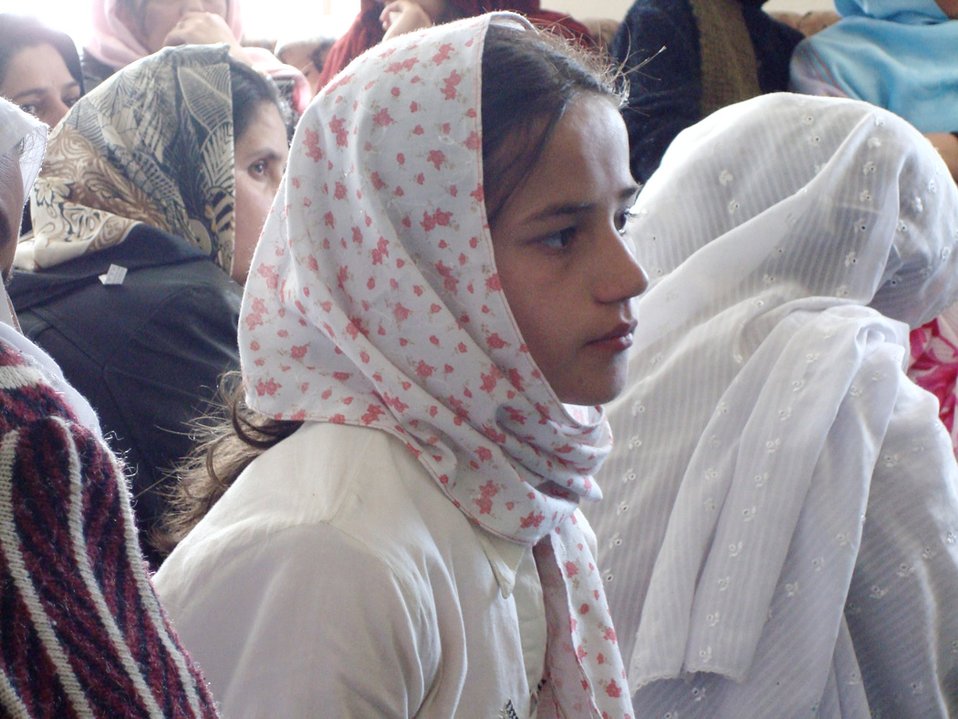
Afghan women celebrate culture at Women's Day event

A girl listens to a speech during the International Women's Day celebration March 8 in Pajshir province's Bazarak district of Afghanistan. More than 100 women and girls attended the event.